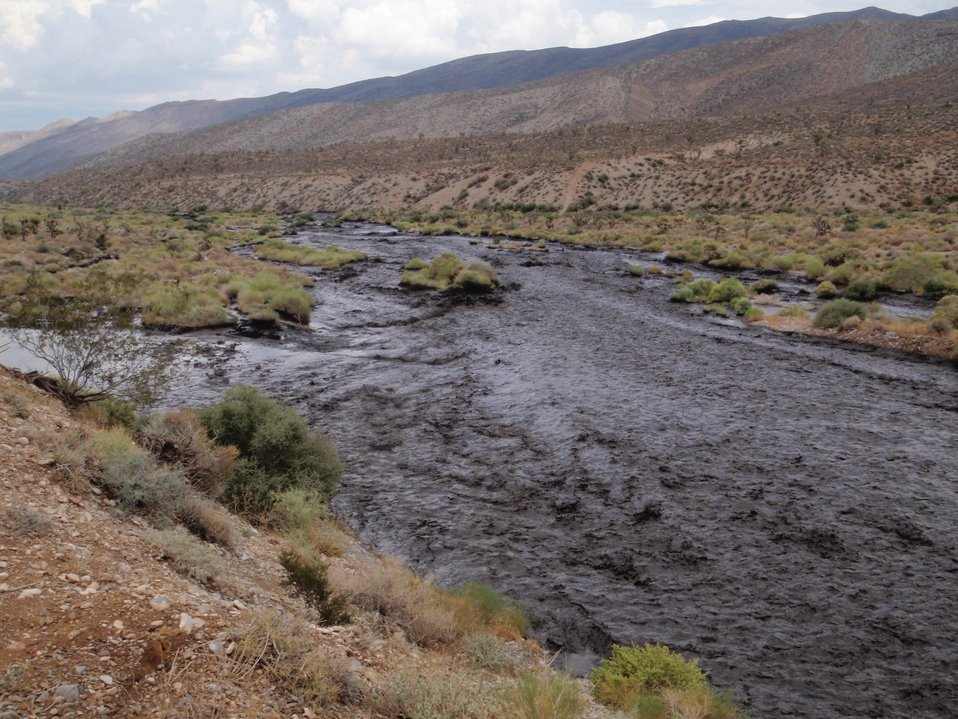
Mud flow at Harris Springs Road in Toiyabe National Forest near Humboldt, NV. Vegetation destroyed by the Carpenter Fire causes mudflows that can cause even more damage. The Carpenter Fire in the Toiyabe National Forest near Humboldt, NV was caused by a lightning strike on Jul. 1, 2013. The fire has consumed nearly 27,881acres and is presently 70% contained.